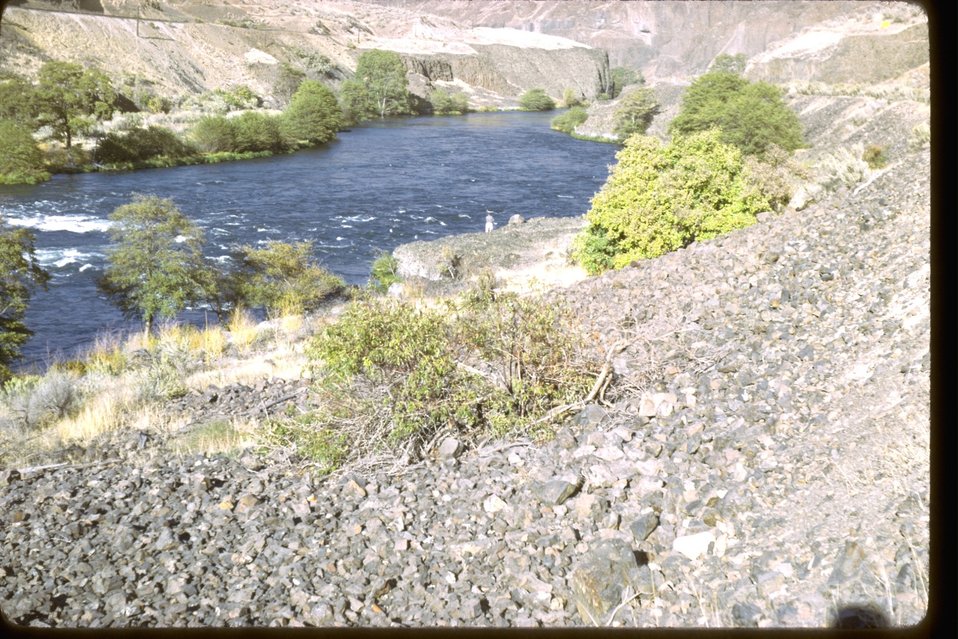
The Lower Deschutes River below Twin Bridges. View of the Riparian Area.